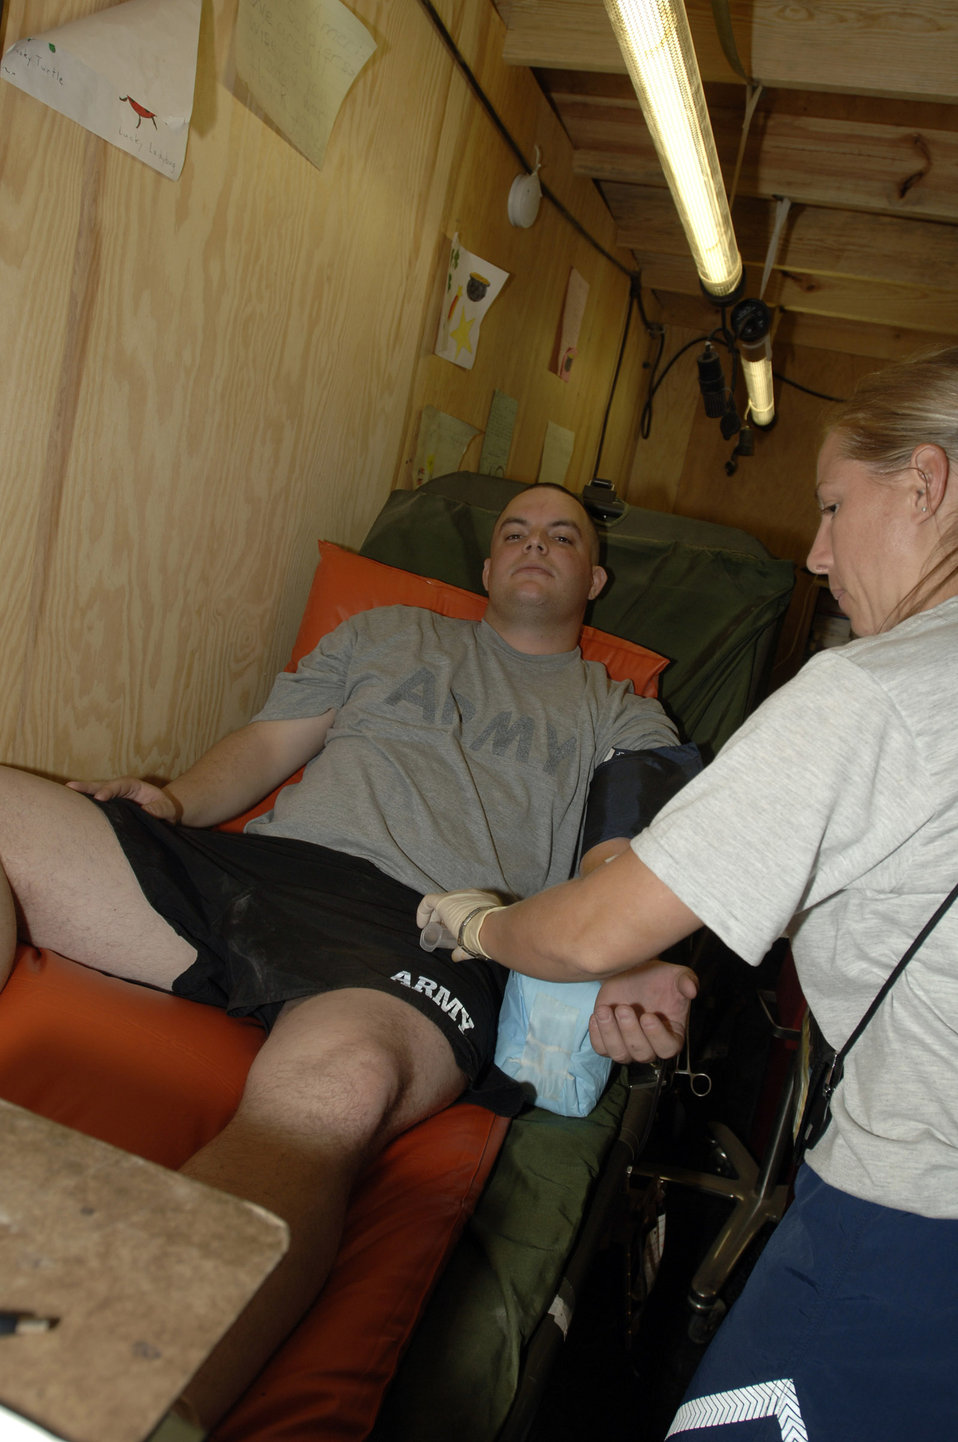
Blood donors in Iraq

BALAD Air Base, Iraq -- An U.S. Soldier donates blood here on Sept. 29 to help Iraqi citizens caught in the car bomb blasts that day in the town of Balad.